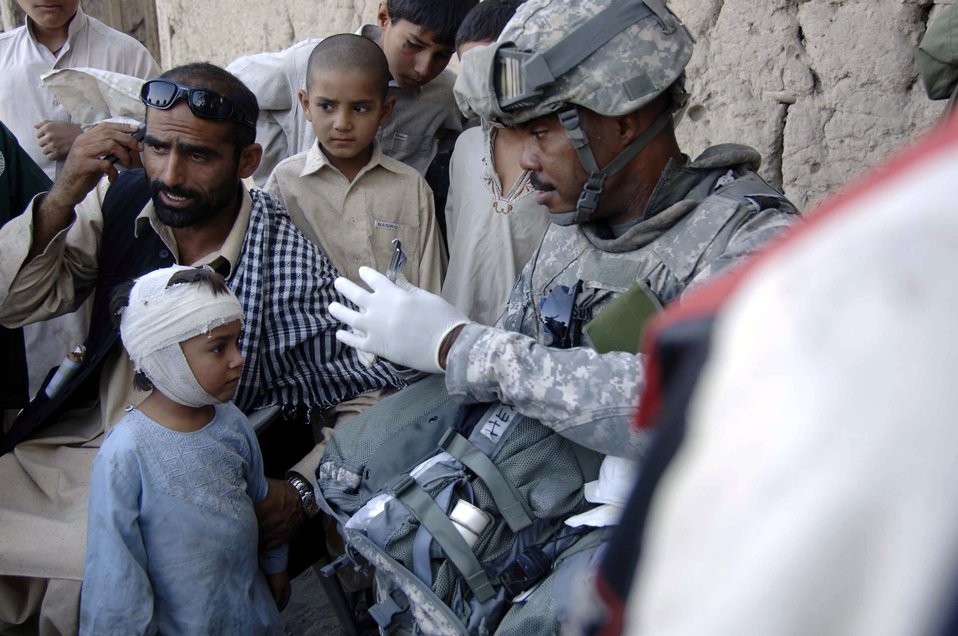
American servicemembers take reconstruction to new level

Tech. Sgt. William Allison provides medical aid to an Afghan child during a foot patrol Nov. 8 in the Nangarhar Province of Afghanistan. He is part of the Nangarhar Provincial Reconstruction Team that is made up of Airmen and Soldiers charged with assisting the provincial government in improving security, governance and reconstruction. Sergeant Allison is a native of Detroit and assigned to Dover Air Force Base, Del.